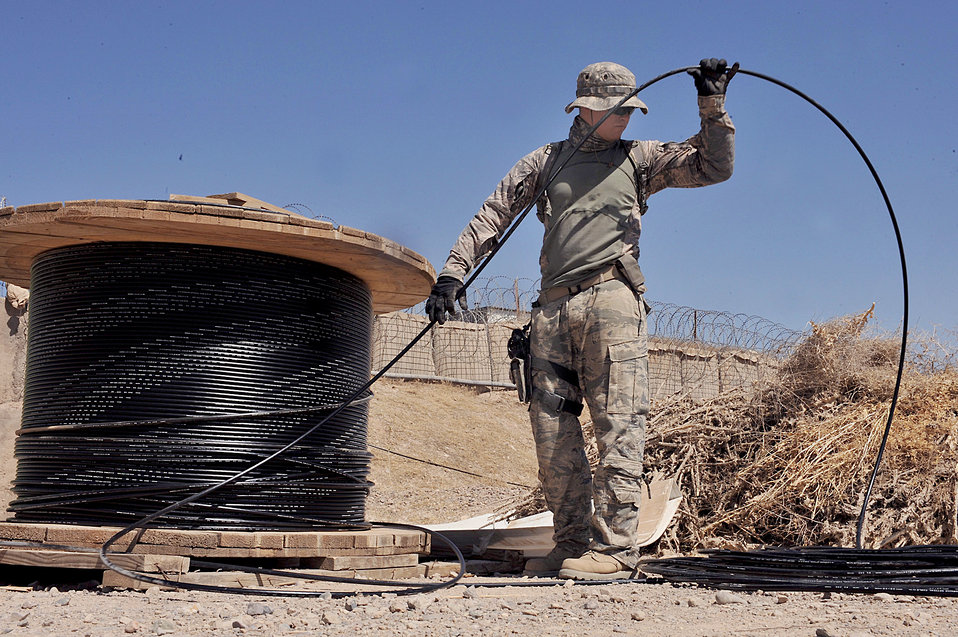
A really big spool

Tech. Sgt. Justin Culver unwinds fiber optic cable at Camp Herat, Afghanistan, in late July. The cable will improve connection and bandwidth base wide. Sergeant Culver is deployed to the 219th Expeditionary Engineering Installation Squadron.